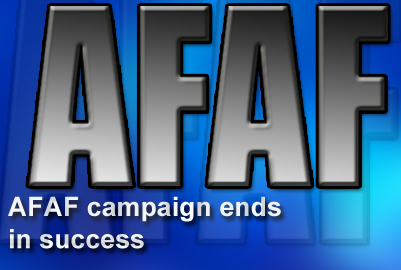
AFAF campaign